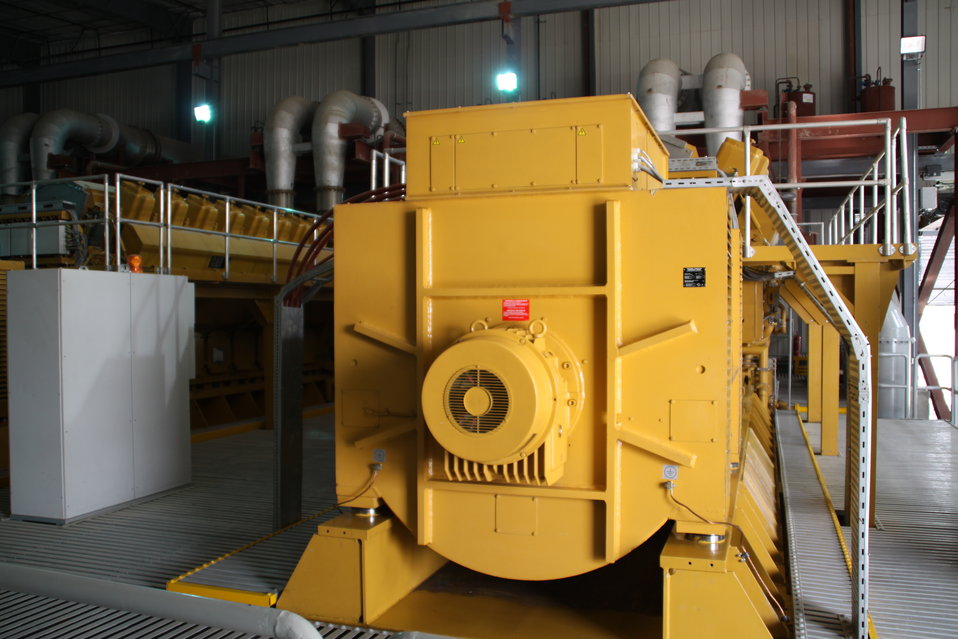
105 MW Tarakhil Power Plant Handover